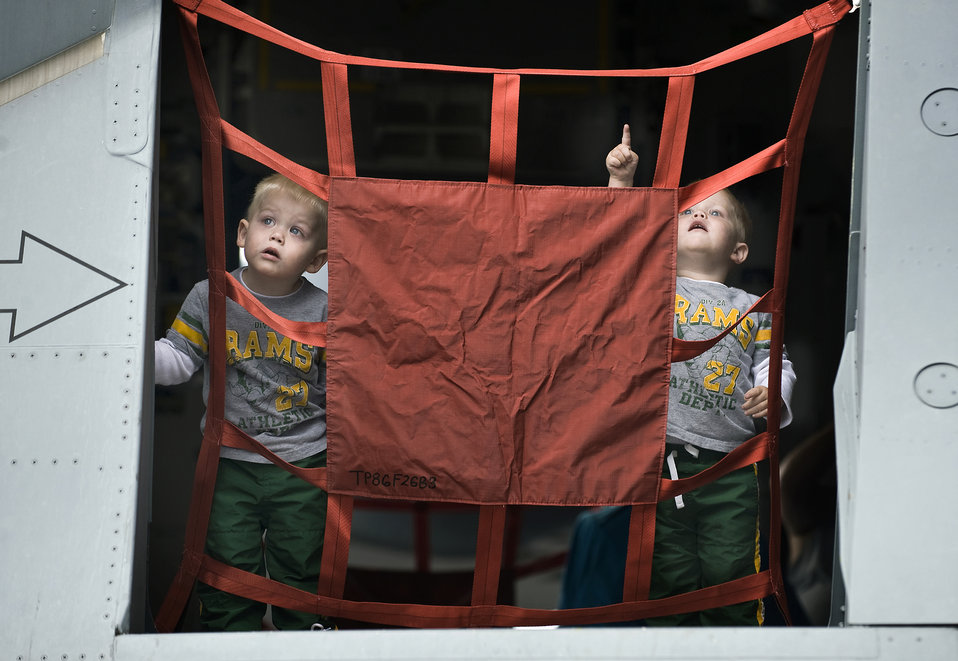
Look there!

Two-year-old twins, Damean and Zachoria Winders, watch the California Capital Air Show aerial demonstrations from the cargo door of a C-17 Globemaster III during Air Force Week Sacramento, Sept. 12, 2009. Damean and Zachoria are the sons of Senior Airman Brian Winders who is assigned to the 60th Aerial Port Squadron at Travis Air Force Base, Calif.